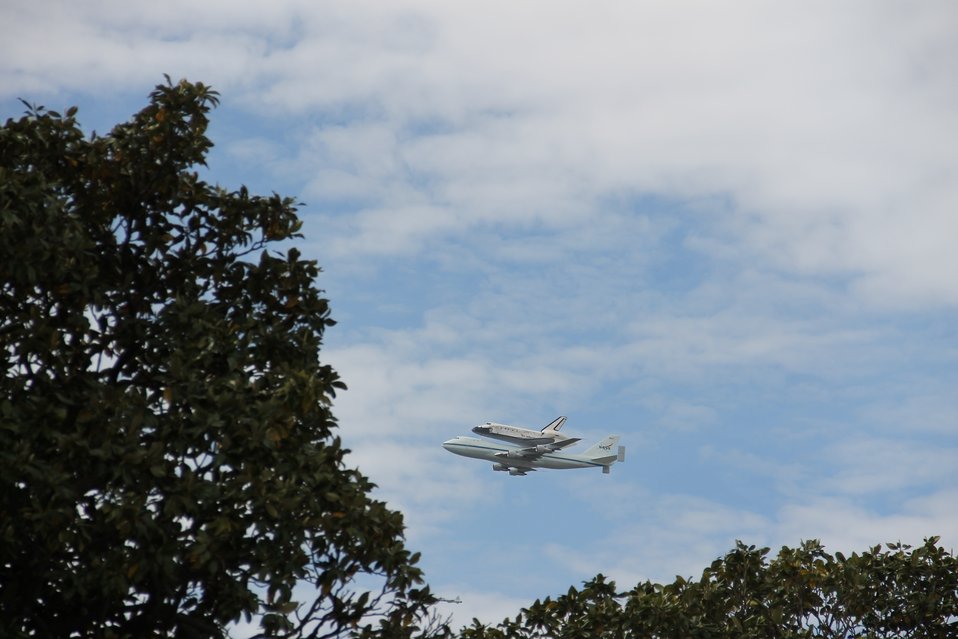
Shuttle Discovery over the Capitol Grounds